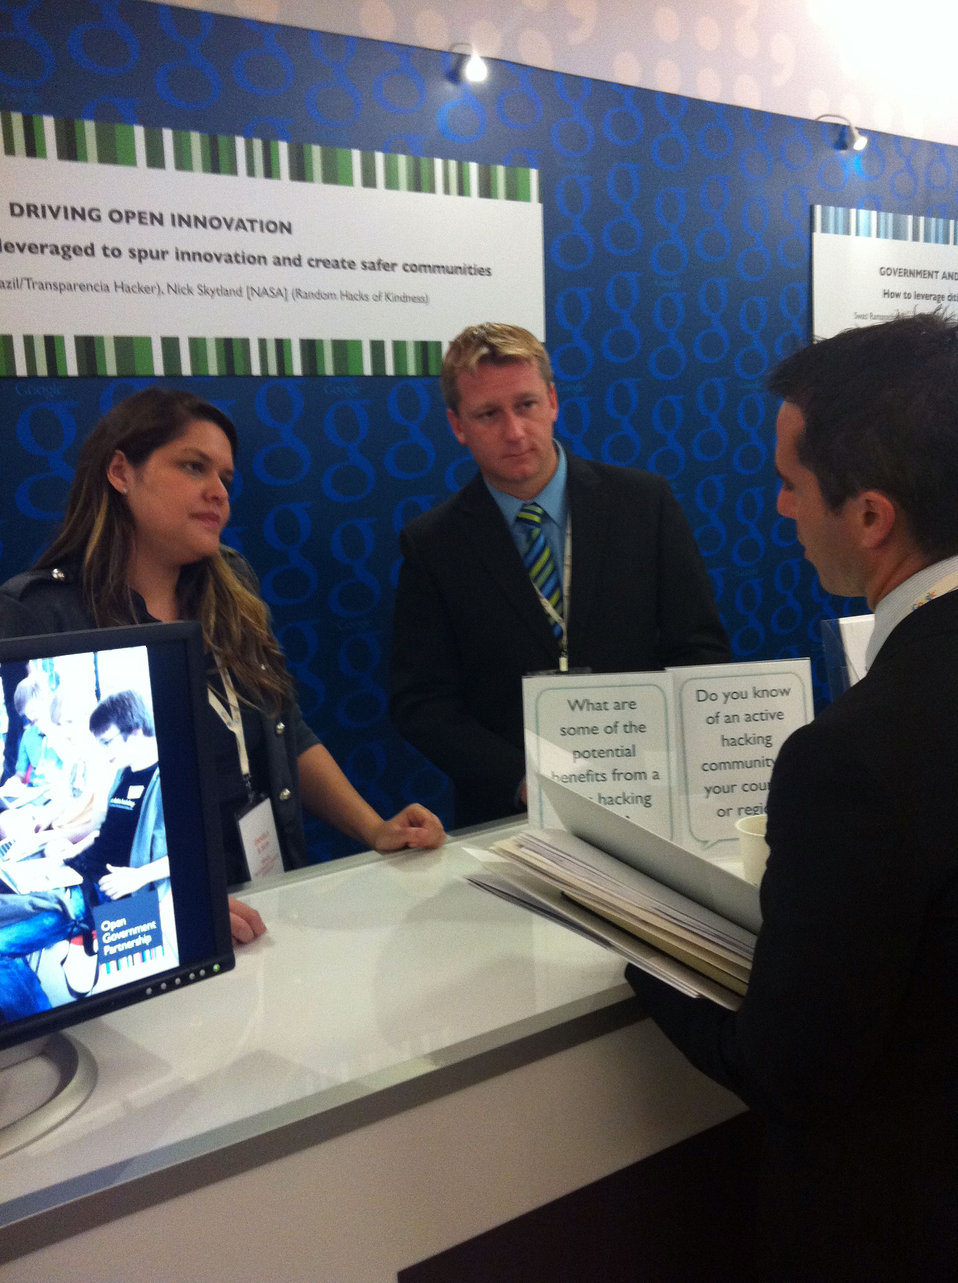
Deputy Assistant Secretary Baer Participates in the 'Power of Open' Event

Deputy Assistant Secretary for the Bureau of Democracy, Human Rights, and Labor Daniel Baer participates in the 'The Power of Open' event at the launch of the the Open Government Partnership at Google New York in New York, New York, on September 20, 2011.